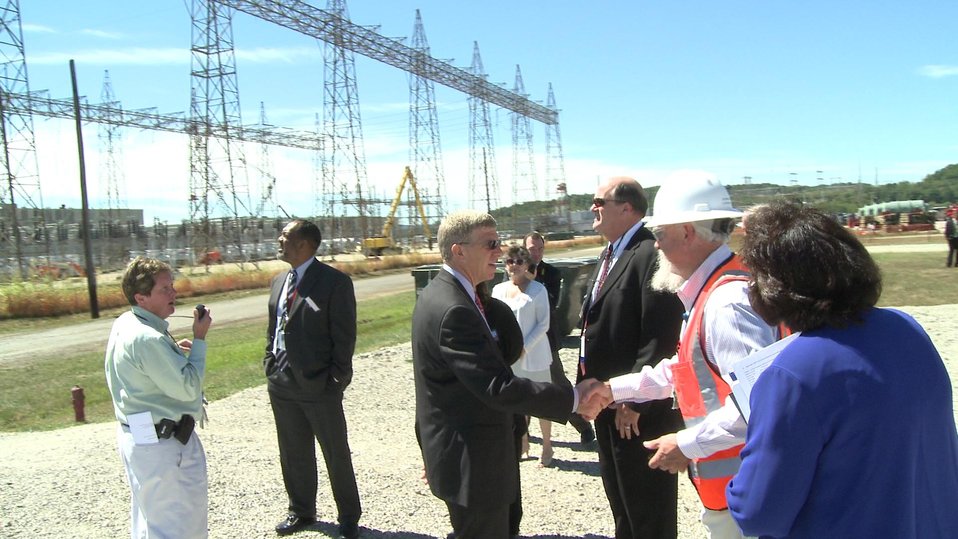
Deputy Secretary Daniel Poneman meets LATA/Parallax Field Operations Manager Steve Mee at the X-533 Electrical Switchyard DandD project well underway at the Portsmouth Site with Recovery Act funding.

Deputy Secretary Daniel Poneman meets LATA/Parallax Field Operations Manager Steve Mee at the X-533 Electrical Switchyard D&D project well underway at the Portsmouth Site with Recovery Act funding. D&D of the 18-plus acres switchyard is expected to be completed in late October 2010.